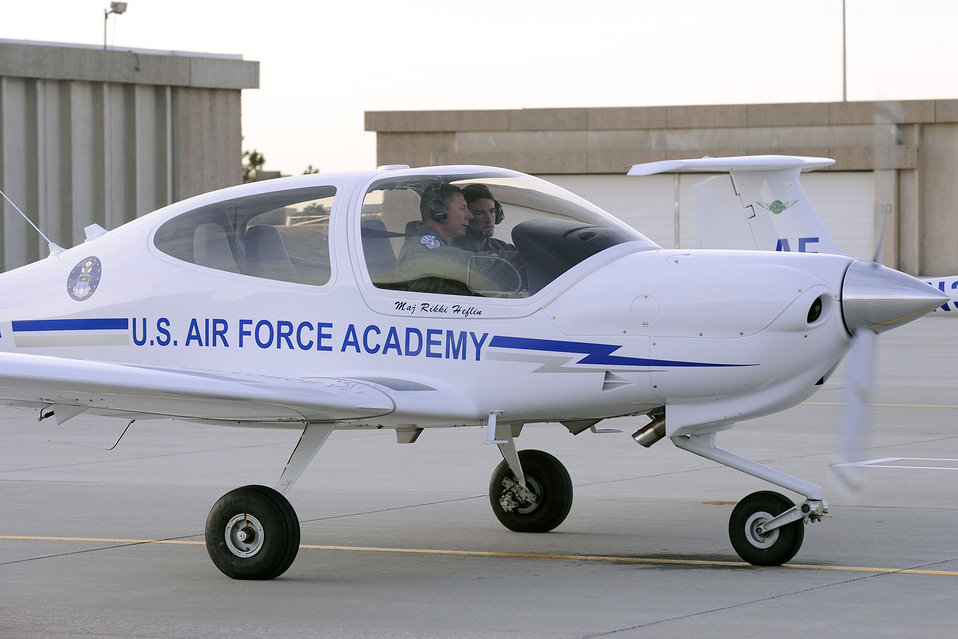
T-52A training flight

Air Force Academy Superintendent Lt. Gen. Mike Gould and Cadet 1st Class Luke Hyder prepare to taxi in a T-52A April 15, 2010, on the airfield at the U.S. Air Force Academy, Colo. The T-52A is the newest addition to the 557th Flying Training Squadron.